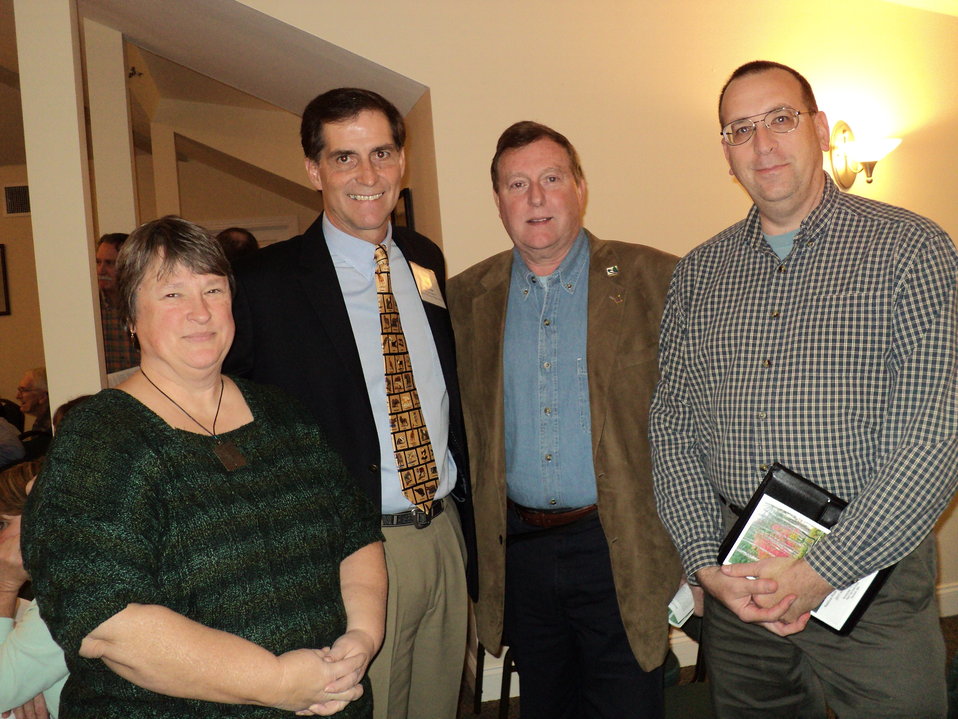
Director Ashe with Friends of Assabet River President Betsy Griffin, Dave Griffin, and Dave Williams